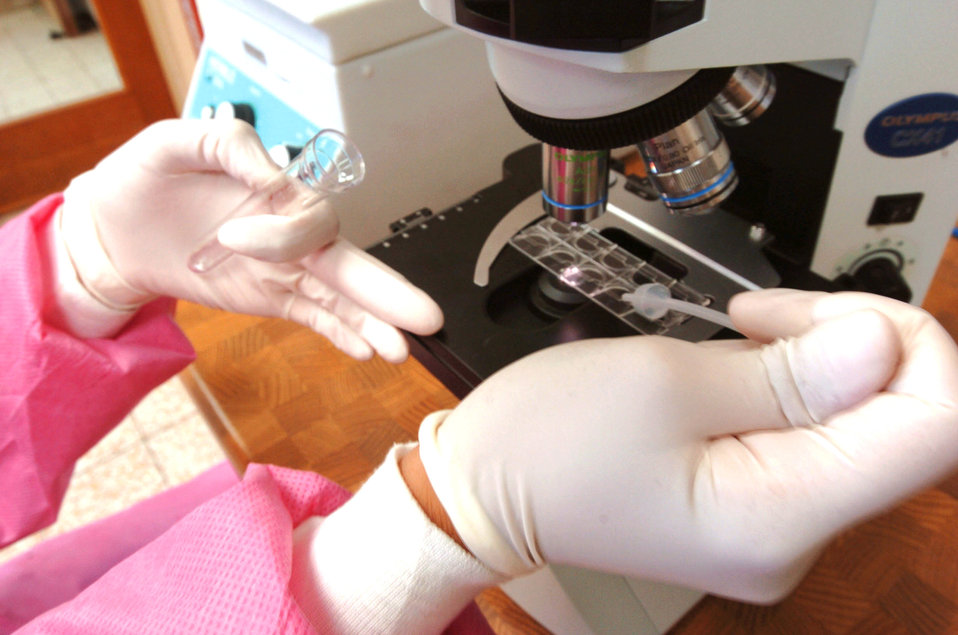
A closer look

SPANGDAHLEM AIR BASE, Germany (AFPN) -- Senior Airman Jennifer Attridge prepares to observe a urine sample at the laboratory here. During urinalysis, lab technicians can check for red and white blood cells, bacteria, yeast, mucus and epithelial cells. Technicians assist physician's assistants and nurses, and can help diagnose potential illnesses.Airman Attridge is assigned to the 52nd Medical Support Squadron.